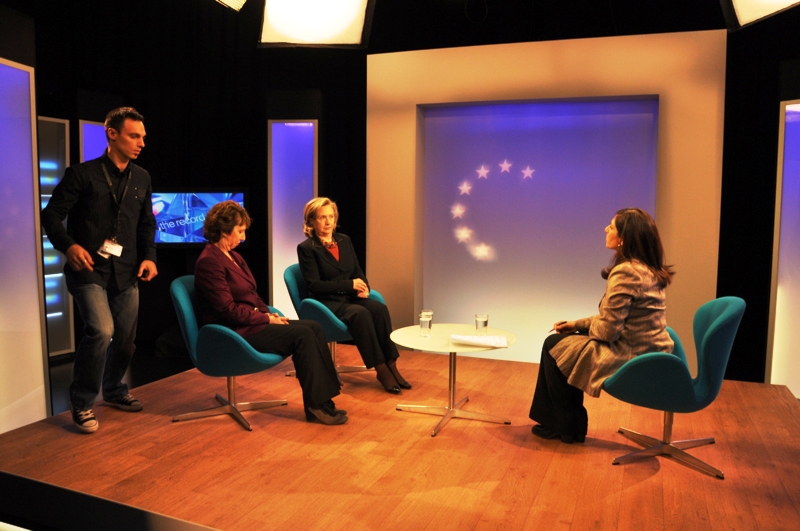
Behind the Scenes: Secretary Clinton and EU High Representative Ashton Participate in a Joint BBC Interview

Behind the Scenes: U.S. Secretary of State Hillary Rodham Clinton and EU High Representative Catherine Ashton participate in a joint BBC interview in Brussels, October 14, 2010.